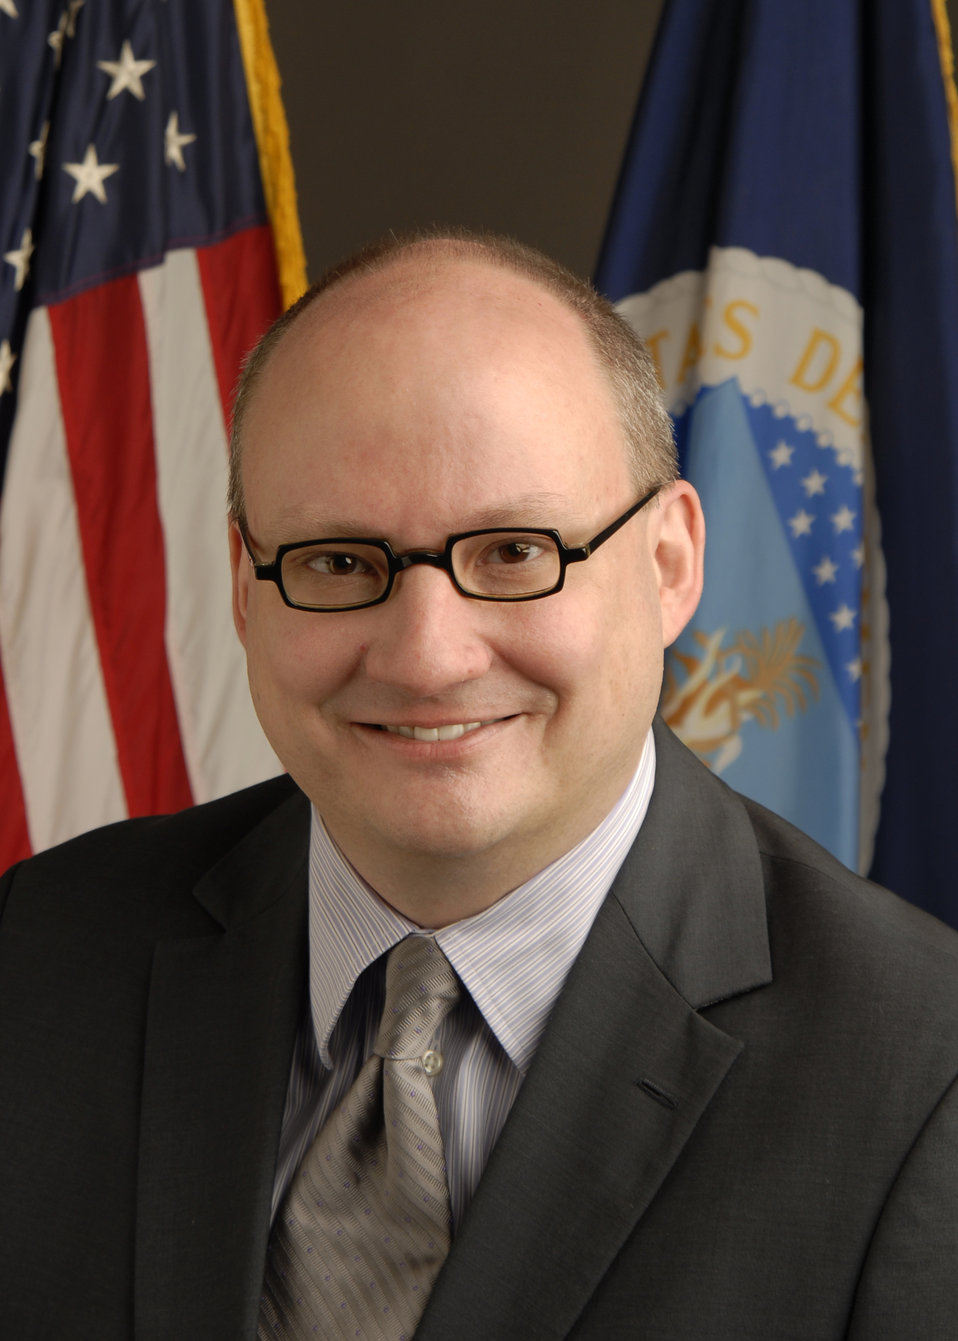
20110613-OC-KJH Office of Communications Director Matt Paul

Agriculture Director of Communications Matt Paul.